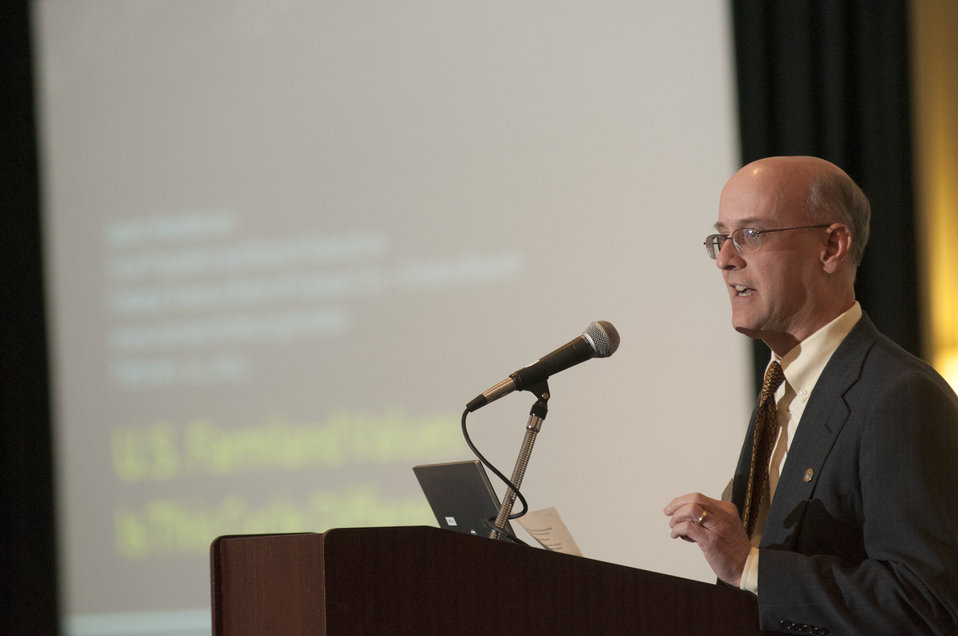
Farm Credit Administration Office of Regulatory Policy Senior Economist Steven Koenig moderated the Grains and Oilseeds Luncheon during the U.S. Department of Agriculture (USDA) 2013 Agricultural Outlook Forum held at the Crystal Gateway Marriott Hotel in Arlington, VA on Friday, Feb. 22, 2013.